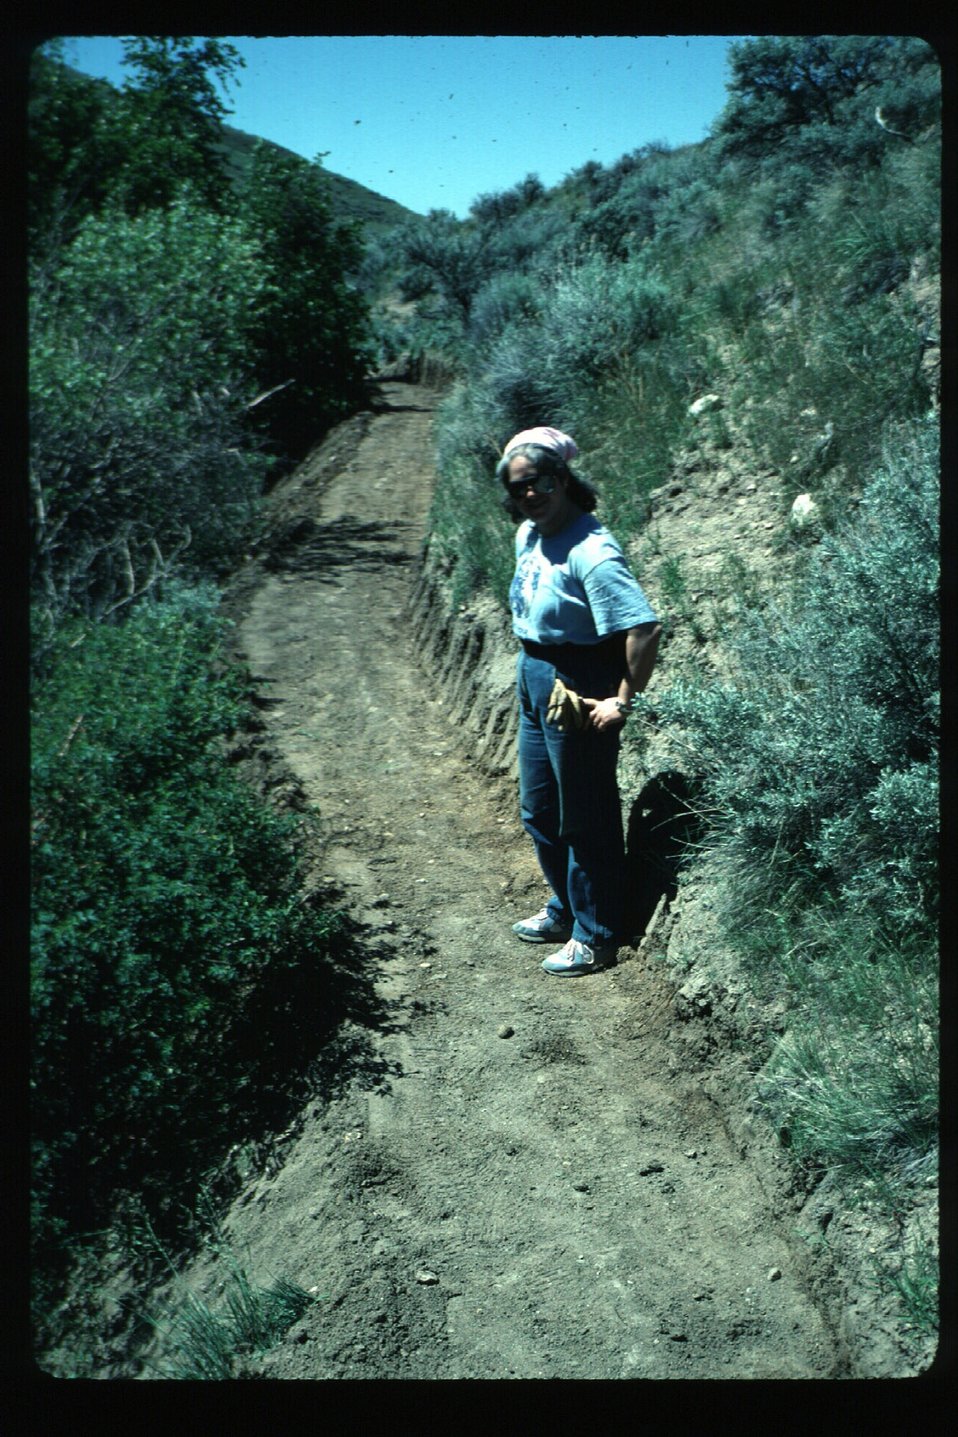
Rangelands Tending the Boise Foothills Trail repair Boise Front Four Rivers Field Office LSRD Lower Snake River District